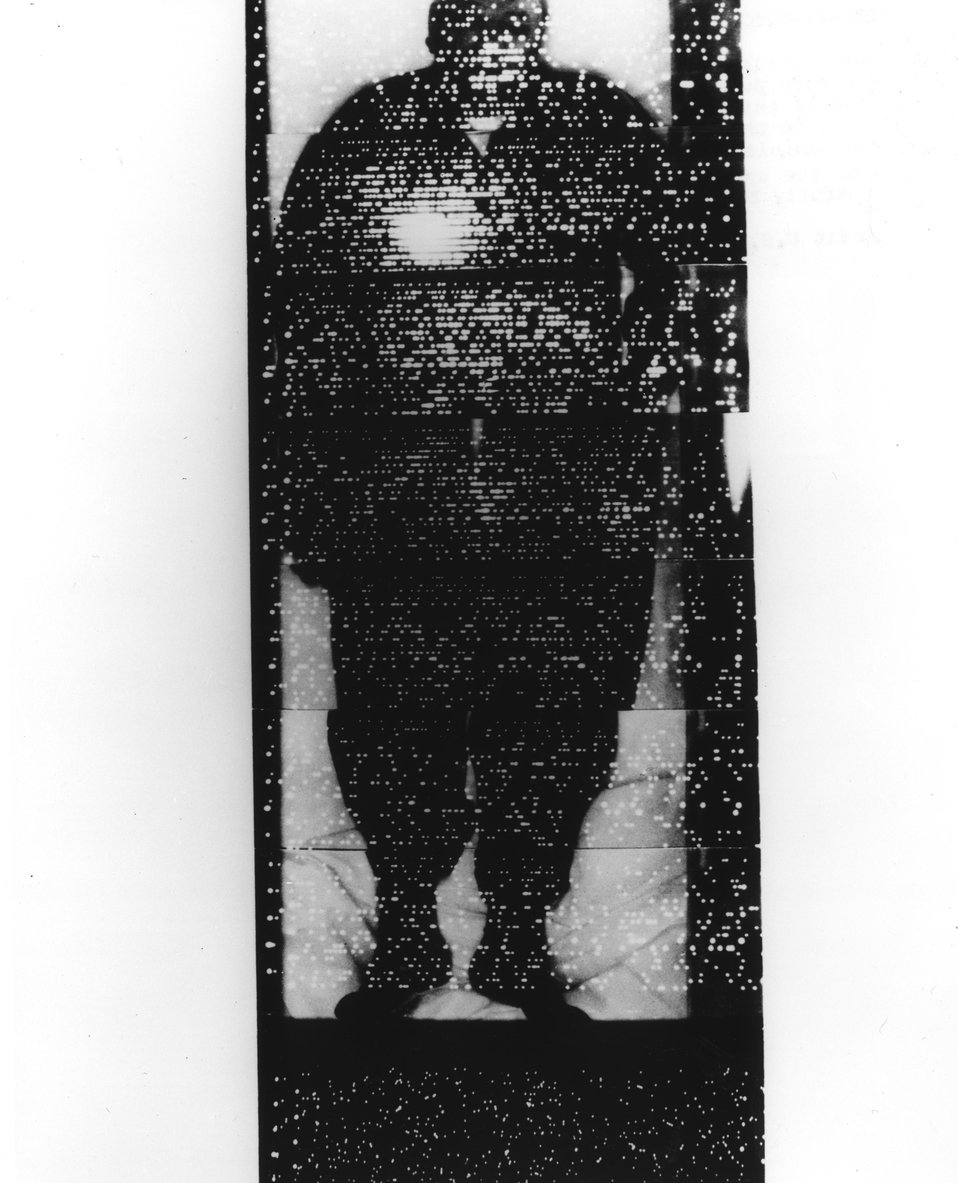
Seven serial scans made with the whole body scanner were put together to provide a whole body scan of this patient with thyroid cancer metastasized to the lung. Circa 1964.